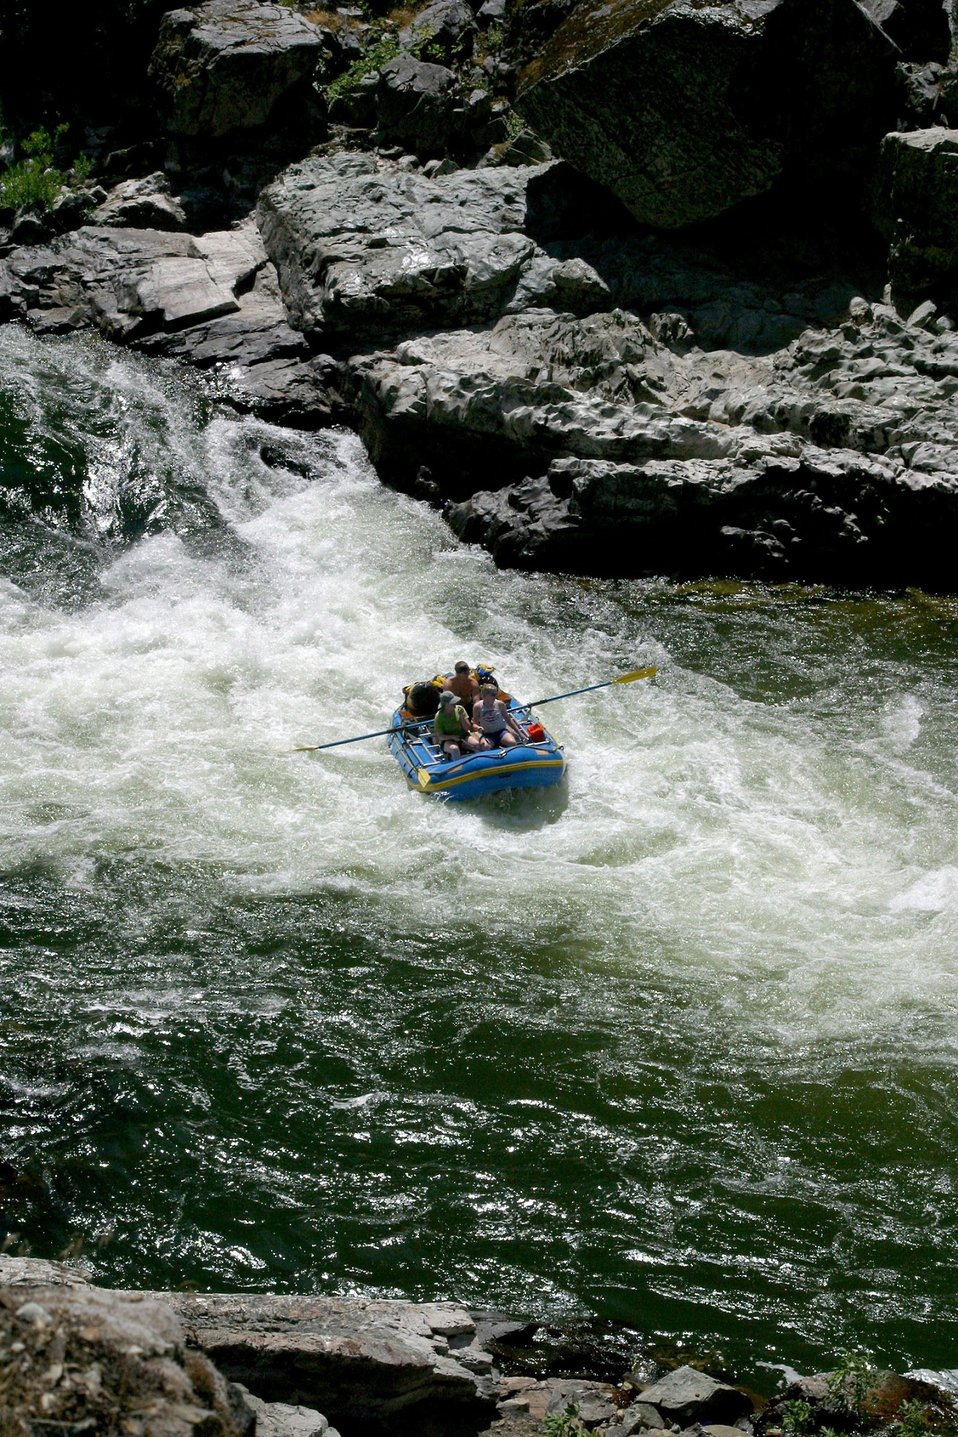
Boater at Grave Creek Falls